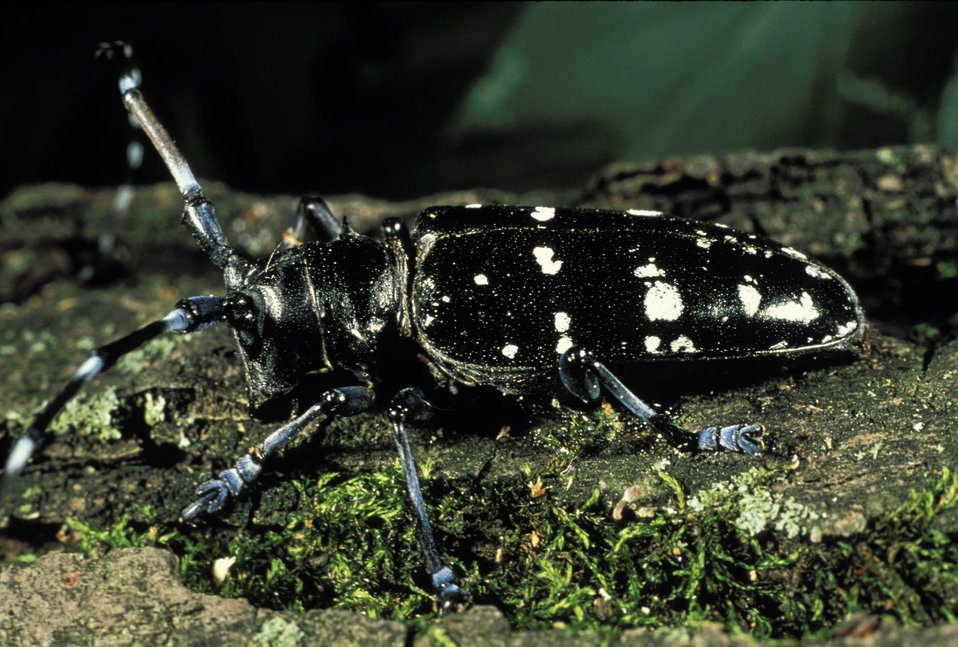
Asian longhorn beetle

Photo credit: USFWS/James Applebee

Climate change has already enabled range expansion of some invasive pest species and will likely create welcoming conditions for new invaders